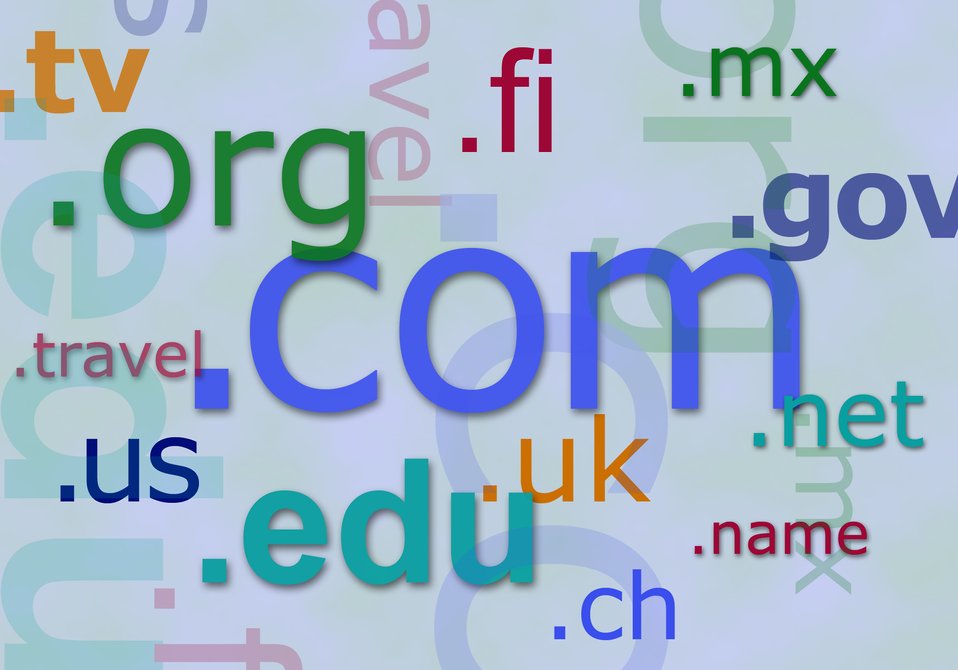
Internet master top-level domains

Photo collage of internet top-level domain names.